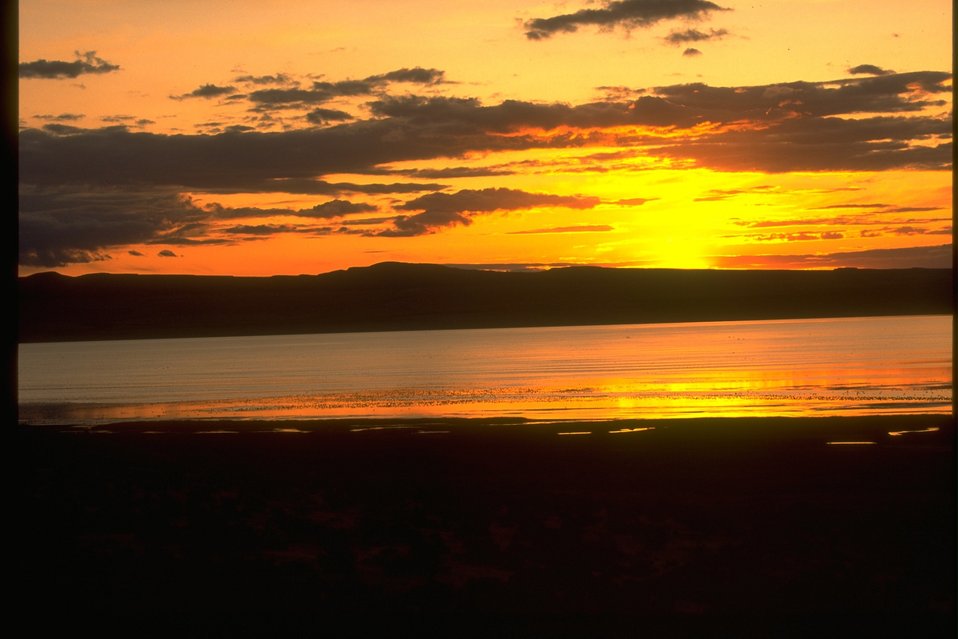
Abert Lake in Eastern Oregon at sunset.